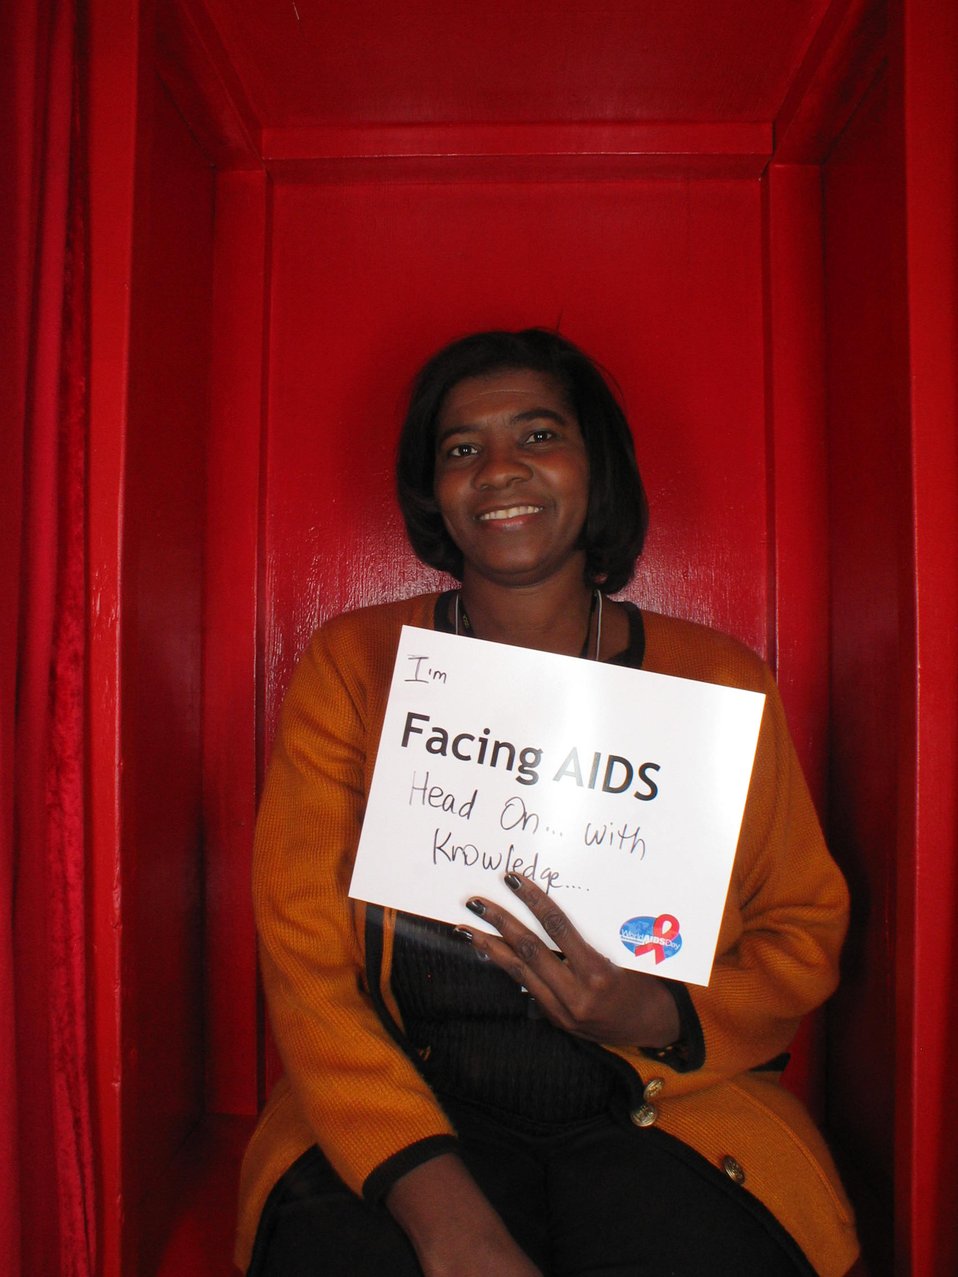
I'm Facing AIDS head on with knowledge